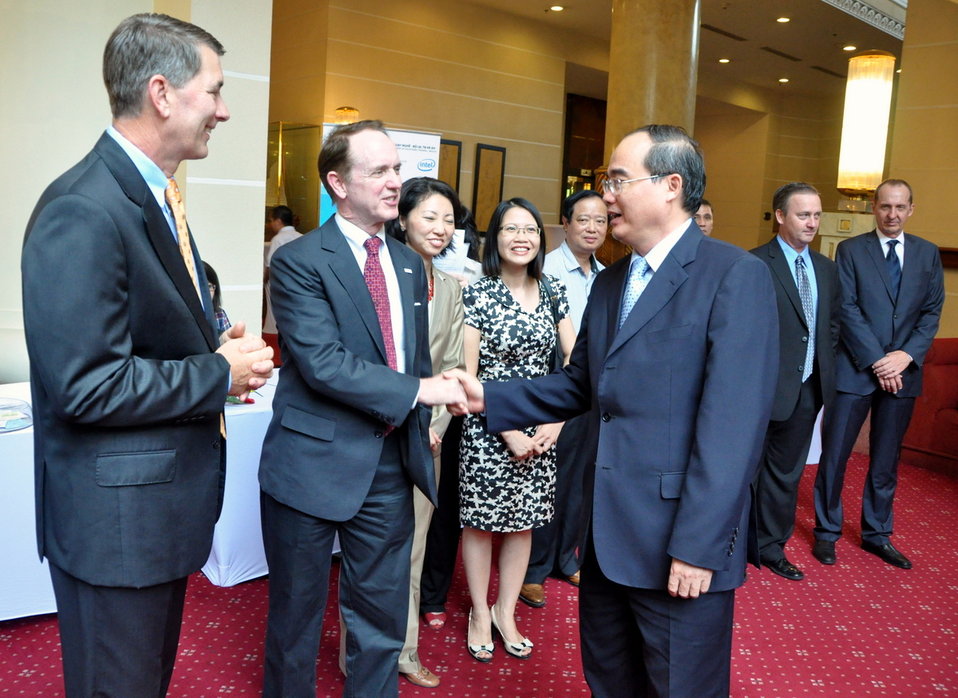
Higher Engineering Education Alliance Program Expansion Launch

Hanoi, August 20, 2012.